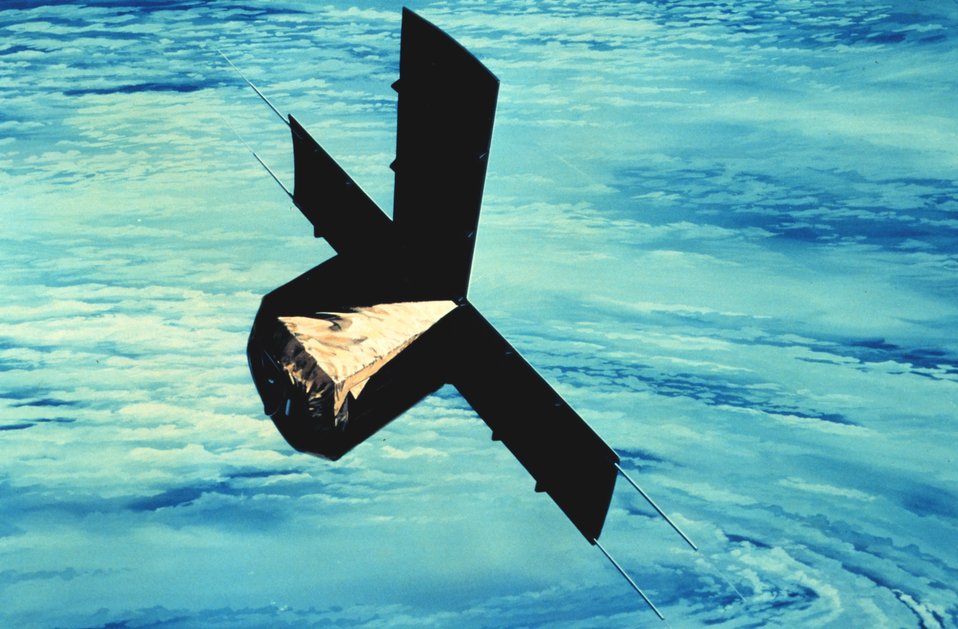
Graphic of ITOS satellite in orbit.